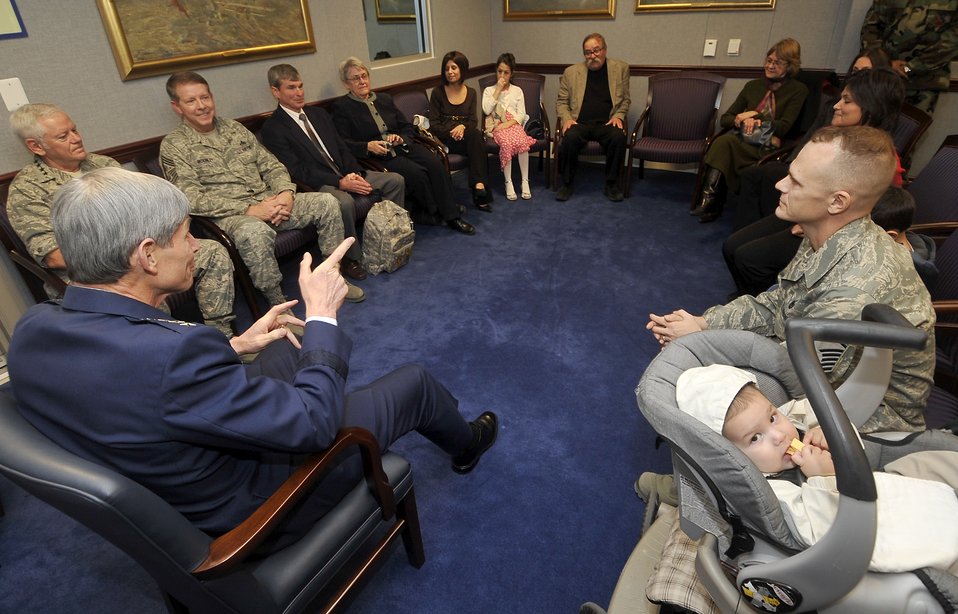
Airman receives Purple Heart

Gen. Norton Schwartz, Air Force chief of staff, and Master Sgt. David Webber (right) chat Jan. 8 in a Pentagon meeting room prior to Sergeant Webber receiving the Purple Heart medal.